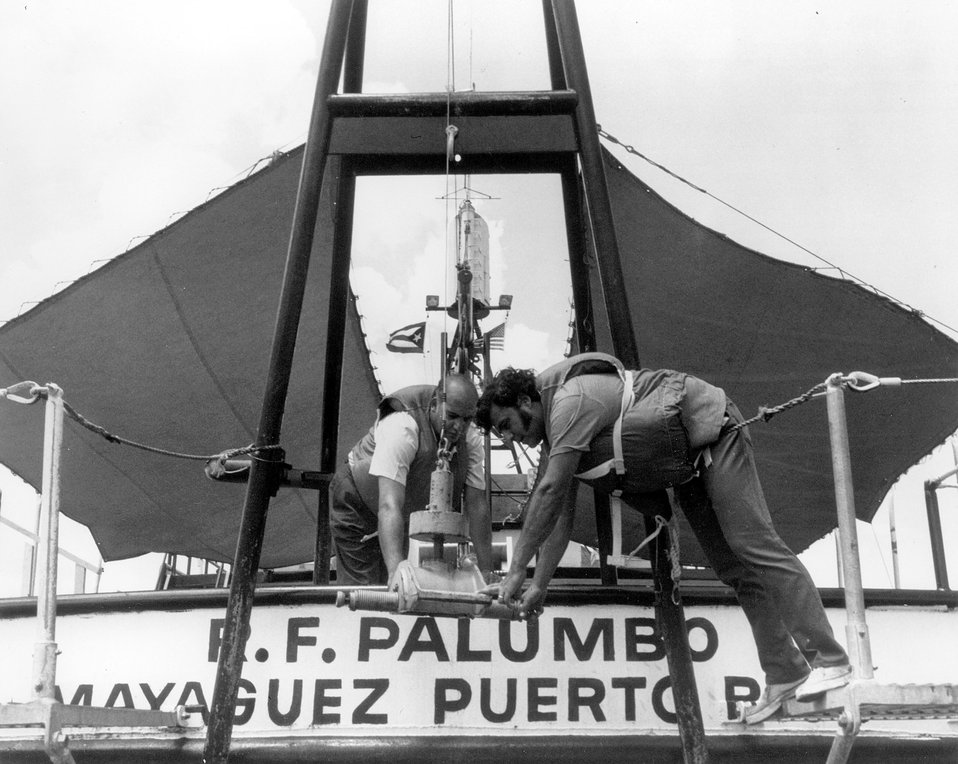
Researchers aboard the R.F. Palumbo, a U.S. Atomic Energy Commission research vessel, take samples from the bottom of the sea in the coastal regions of Puerto Rico. Circa 1972.